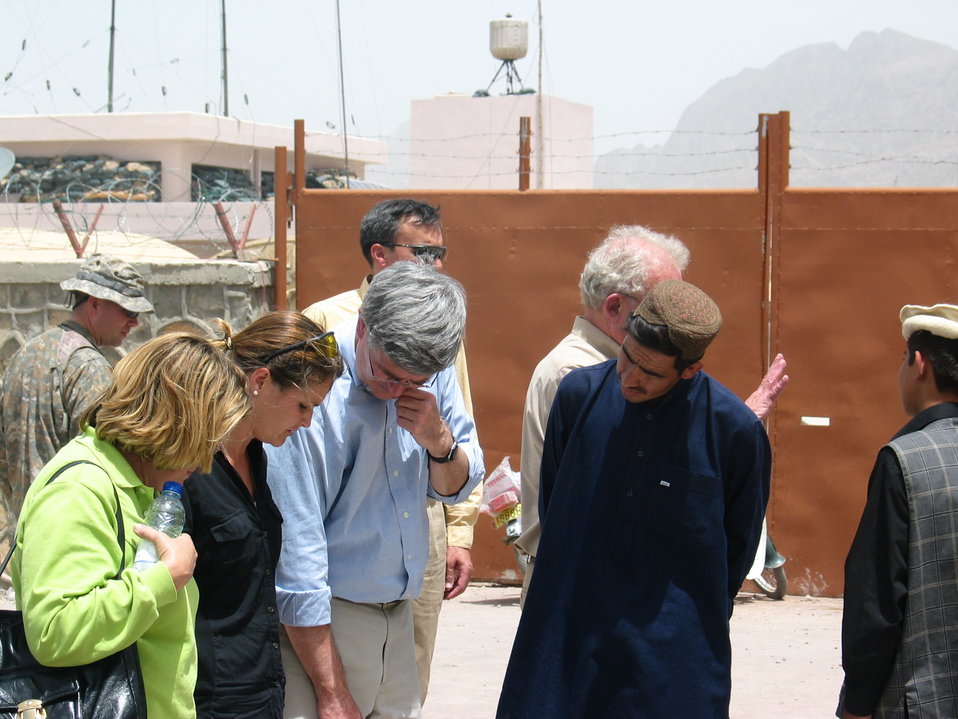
CODEL Berman